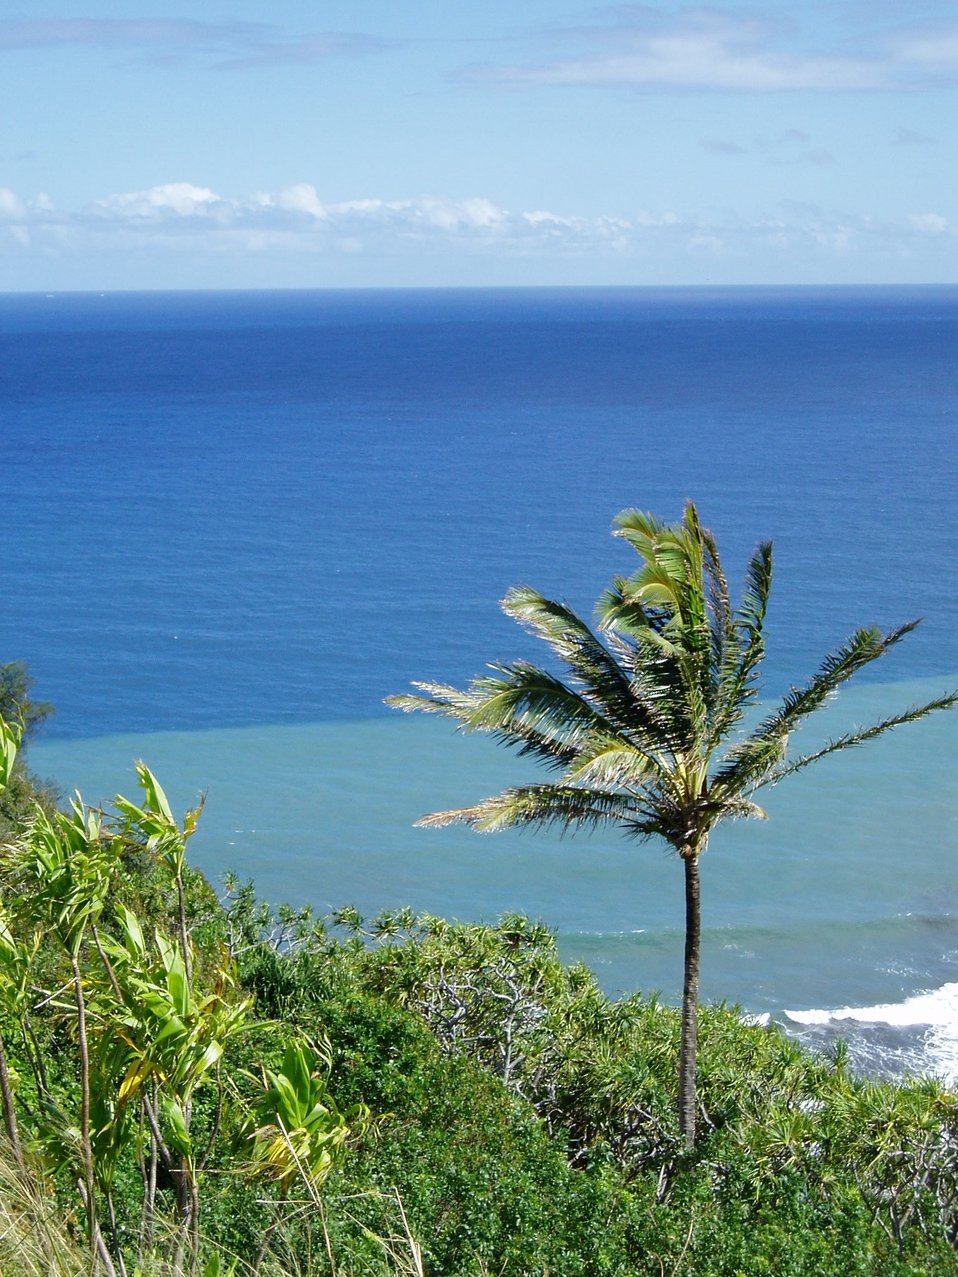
Looking to the north from the Kohala Mountains. There is no land for thousands of miles.